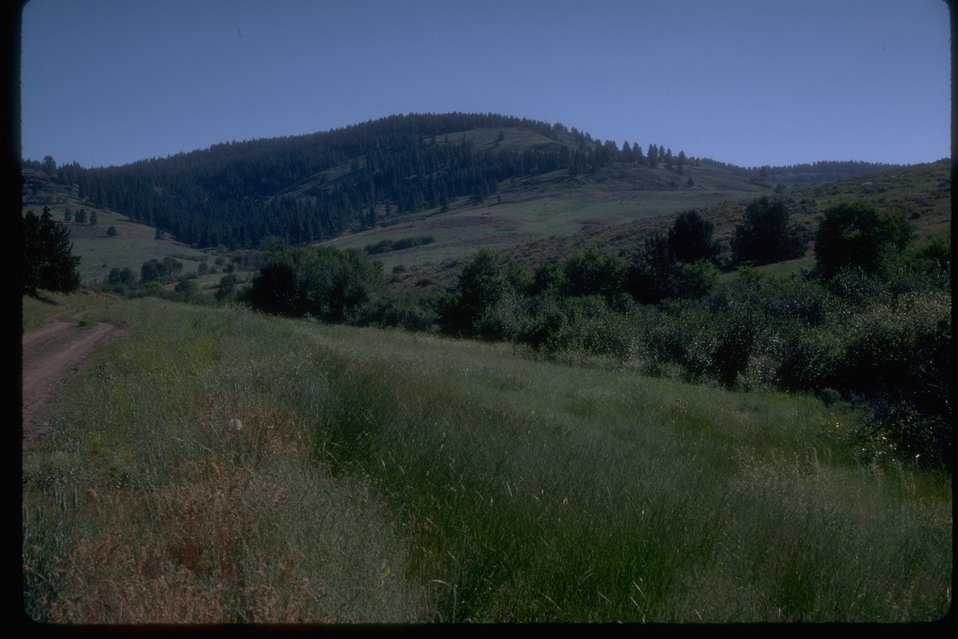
A dirt road runs through the Clover Creek area.